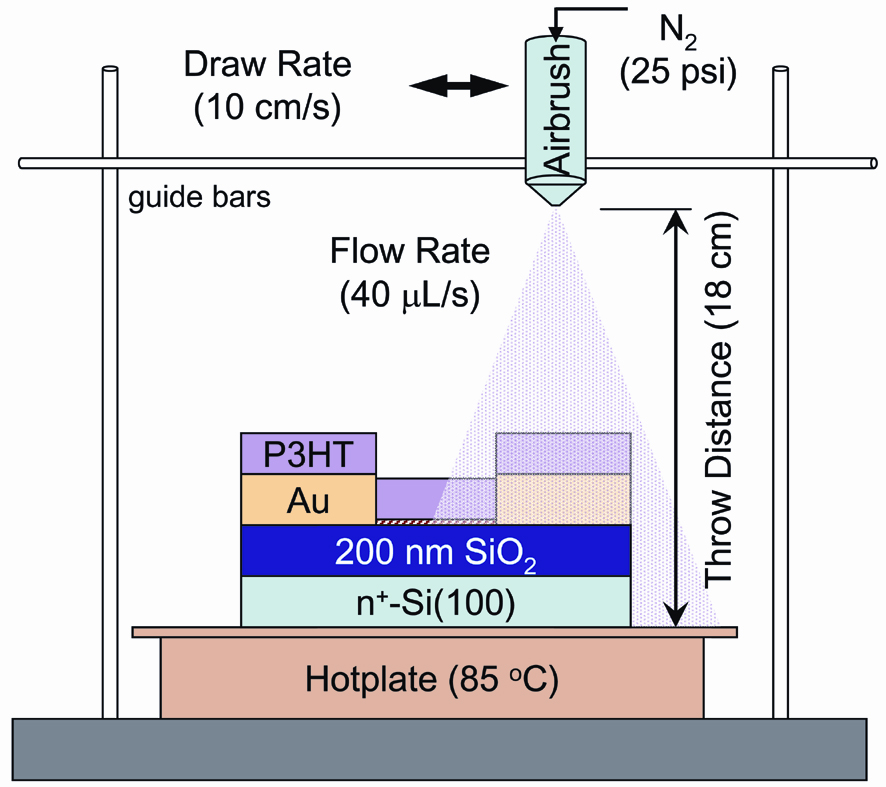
Semiconductor; Transistors

This airbrush technique deposits a well-studied material called P3HT to create spray-on transistors, which perform comparably to lab-standard equivalents made by spin coating.